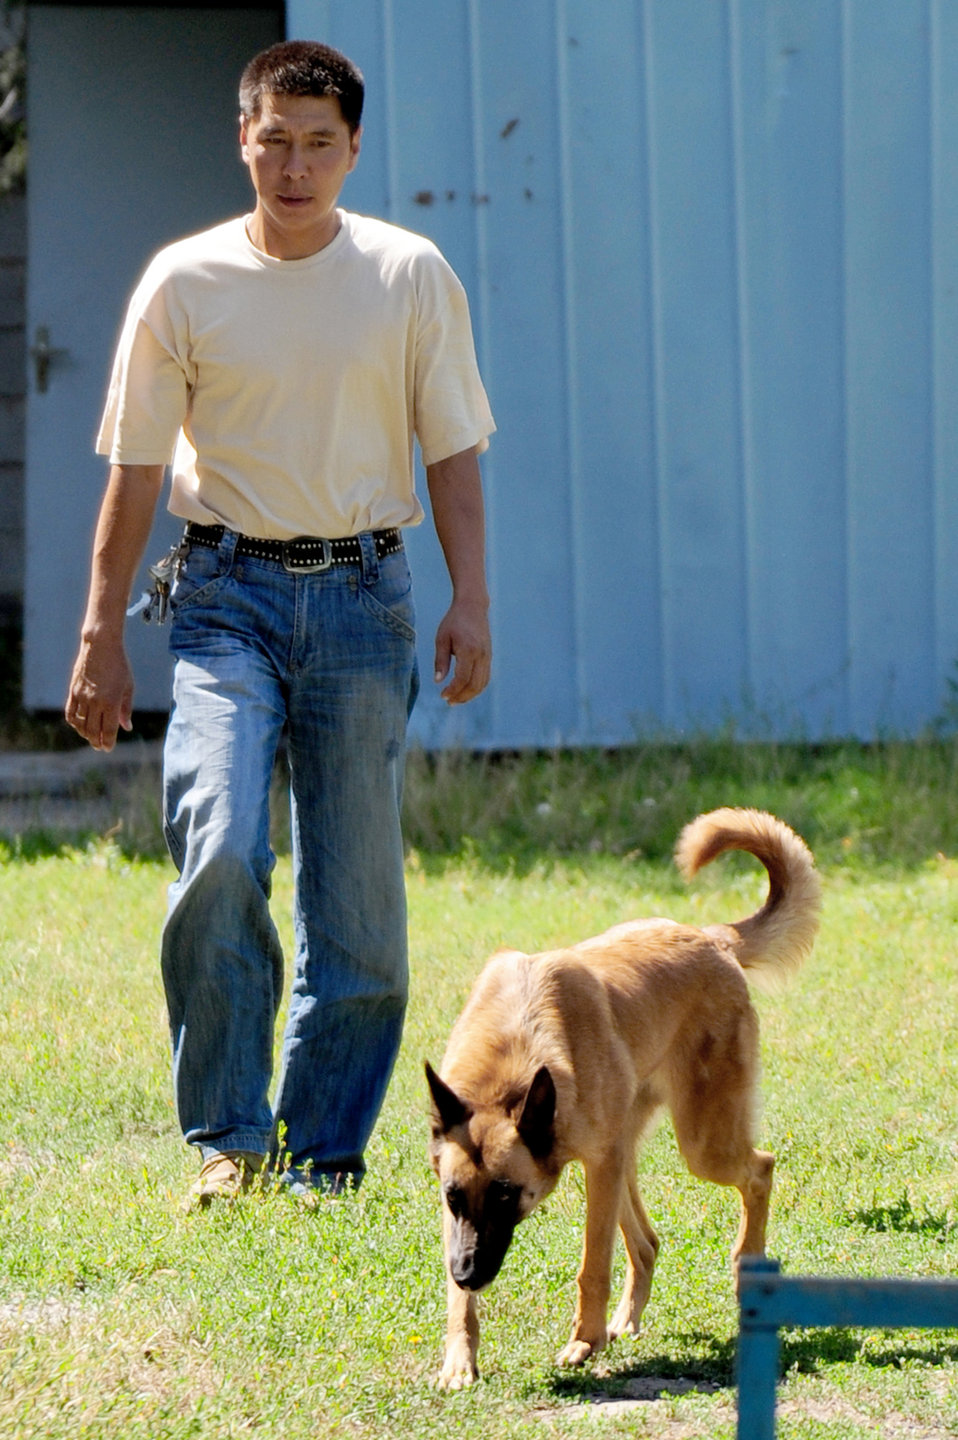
Airmen partner with Kyrgyz security service K-9 team

Kyrgyzstan State Security Service K-9 Unit Handler Lt. Maxatbek Turmanbetov walks with his dog prior to training Aug. 7 in Bishkek, Kyrgyzstan. Airmen of the 376th Security Forces Squadron from Transit Center at Manas, Kyrgyzstan, train local handlers with proper techniques similar to military working dog training.